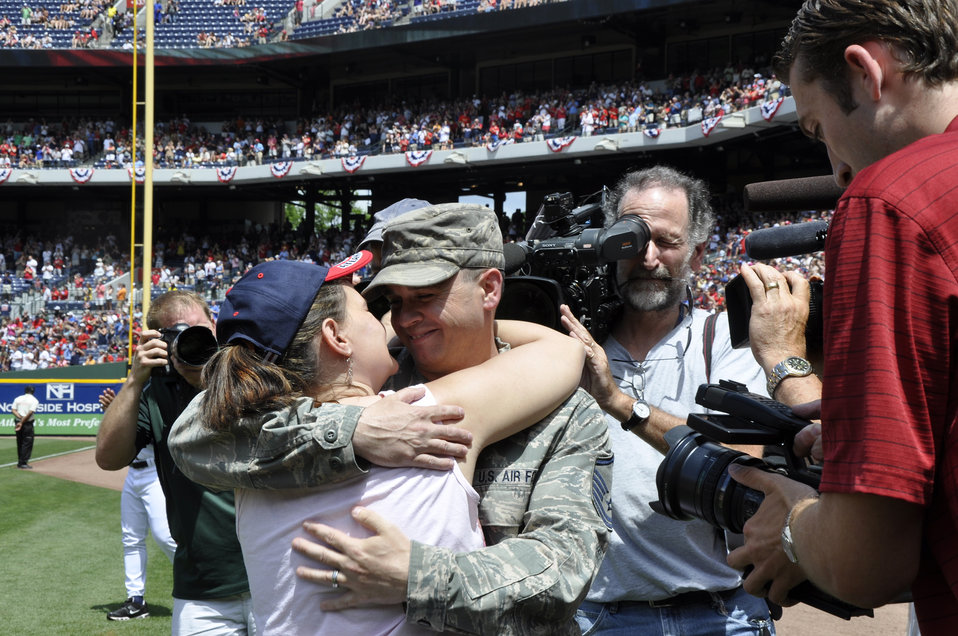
Airman has 'Memorial' reunion during Braves game

Master Sgt. David Sims embraces his wife, Robin, after surprising his family at the Atlanta Braves' Memorial Day game May 28, 2012, in Atlanta. Sims returned from a six-month deployment from Kabul, Afghanistan, May 27. Sims is assigned to Headquarters Air Force Reserve Command's Communications Directorate at Robins Air Force Base, Ga.